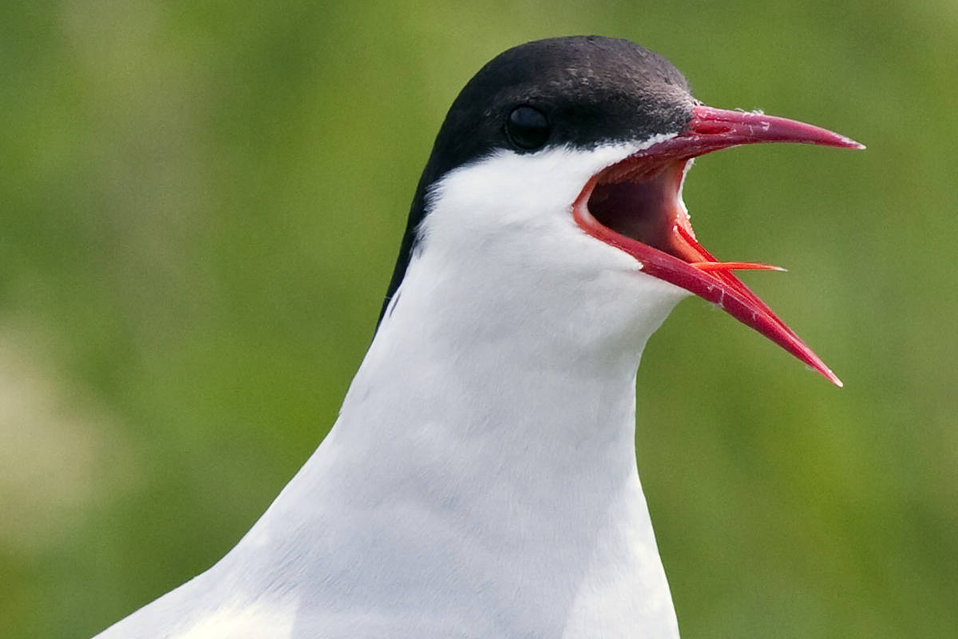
Arctic Tern, petit manan island, maine coastal islands nwr